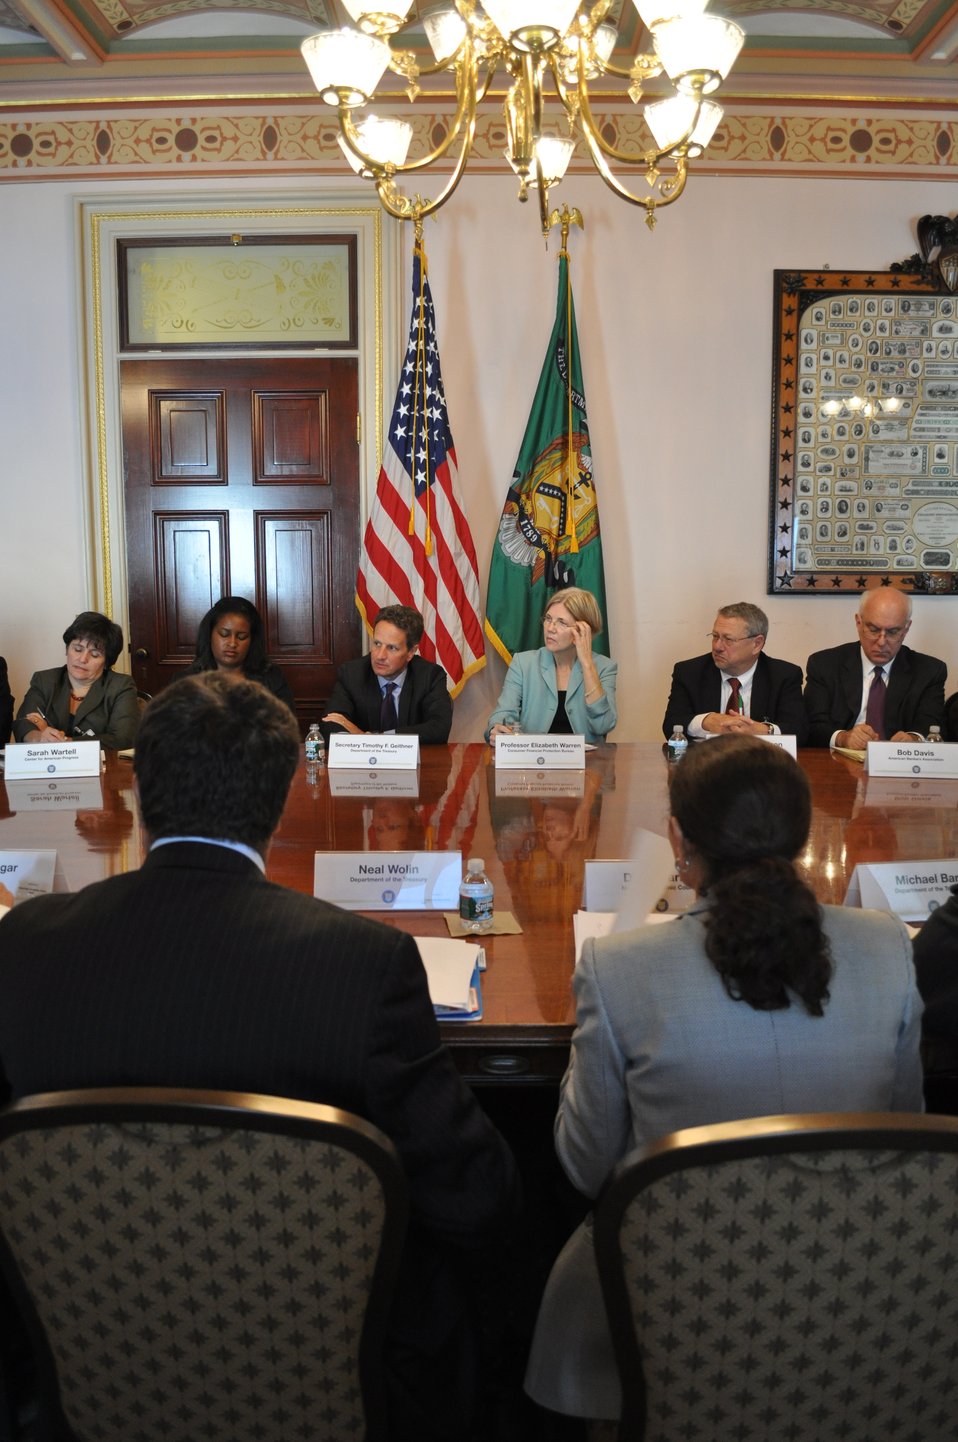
Mortgage Disclosure Forum, 09/21/10

On Tuesday afternoon, Secretary Geithner and Professor Elizabeth Warren hosted a mortgage disclosure forum at Treasury. With the improvement of disclosures for mortgages and other financial products a top priority for the new Consumer Financial Protection Bureau (CFPB), the forum brought together a broad range of stakeholders and experts to provide input on the simplification of mortgage disclosure forms so that consumers have the clear and easy-to-understand information they need to make the financial choices that are best for themselves and their families.